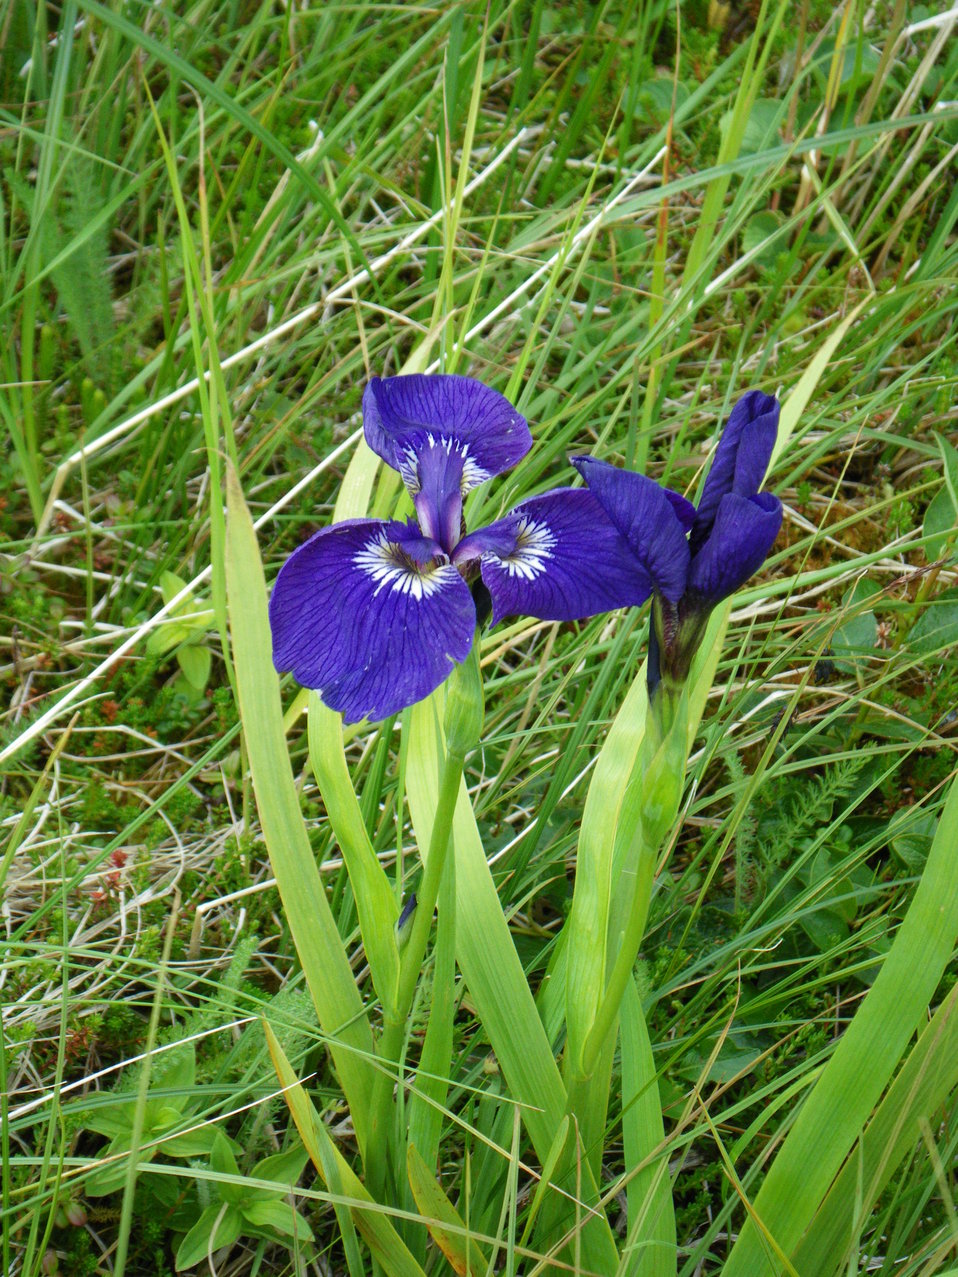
Wild Iris

Izembek National Wildlife Refuge